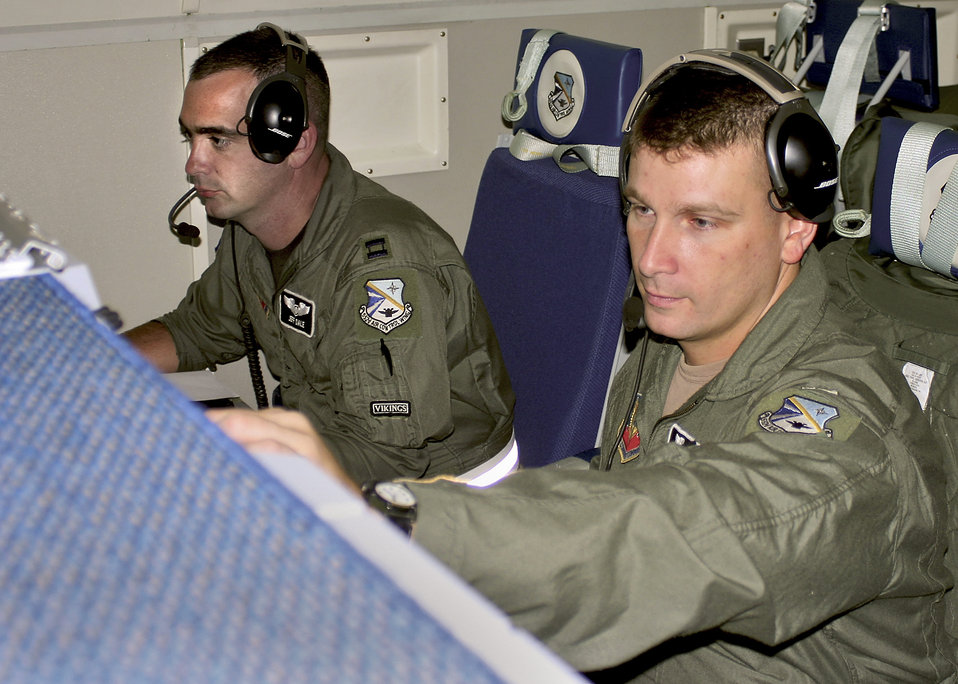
552nd Air Control Wing supports hurricane relief efforts

OVER LOUISIANA -- Capt. Jeff Dale (left) and 1st Lt. John Zanfardino track search-and-rescue aircraft here Sept. 7 in an E-3 Sentry airborne warning and control system aircraft. The air weapons officers usually track fighter aircraft on their radars. They are assigned to the 960th Airborne Air Control Squadron at Tinker Air Force Base, Okla.